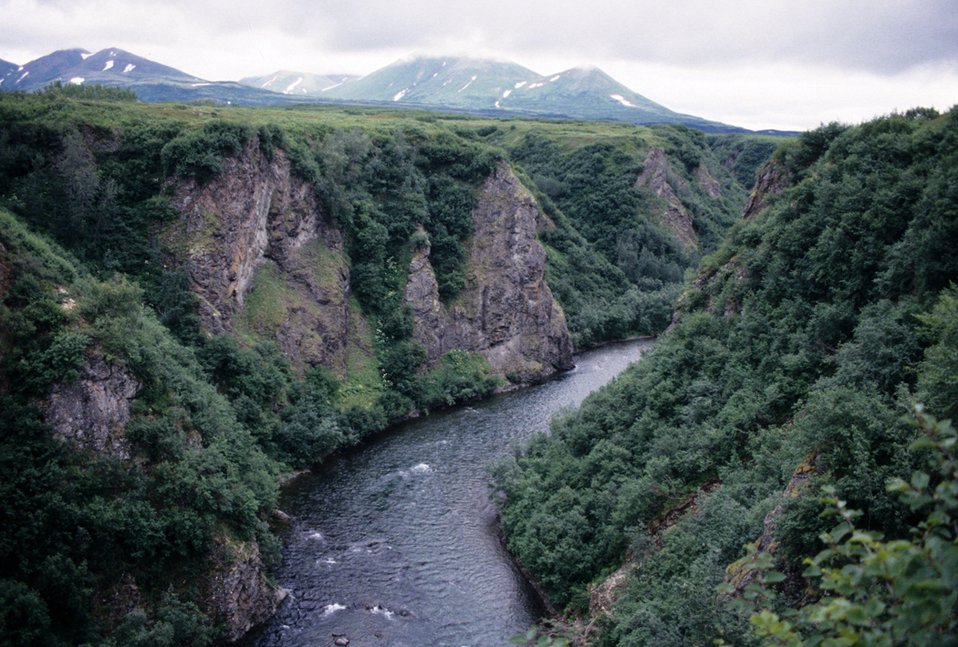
Kemuk River

View of the Kemuk River